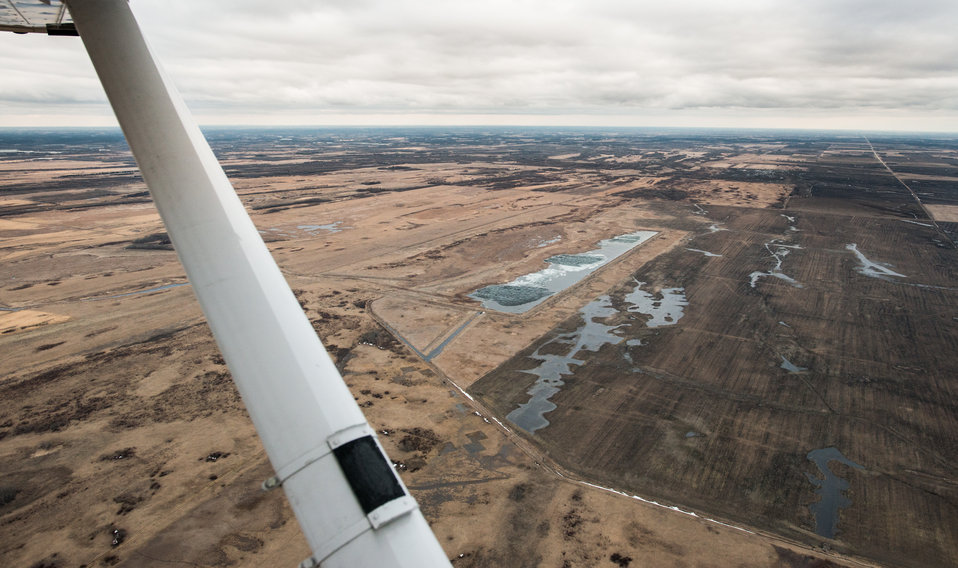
Burnham Creek Dam adjacent to the Department of the Interior (DOI) Glacial Ridge National Wildlife Refuge with U.S. Department of Agriculture (USDA) Wetland Reserve Program and Public Law PL83-566 Small Watershed Program participants’ land in Polk County, MN, on Tuesday, April 30, 2013. USDA Photo by Lance Cheung.

For information please see:

USDA Red River Basin Initiative (RRBI) www.mn.nrcs.usda.gov/news/features13/RRBI.html
Wetlands Reserve Program www.nrcs.usda.gov/wps/portal/nrcs/main/national/programs/...
Public Law PL83-566 (PL-566) Small Watershed Program www.nrcs.usda.gov/wps/portal/nrcs/detail/nd/technical/?ci...